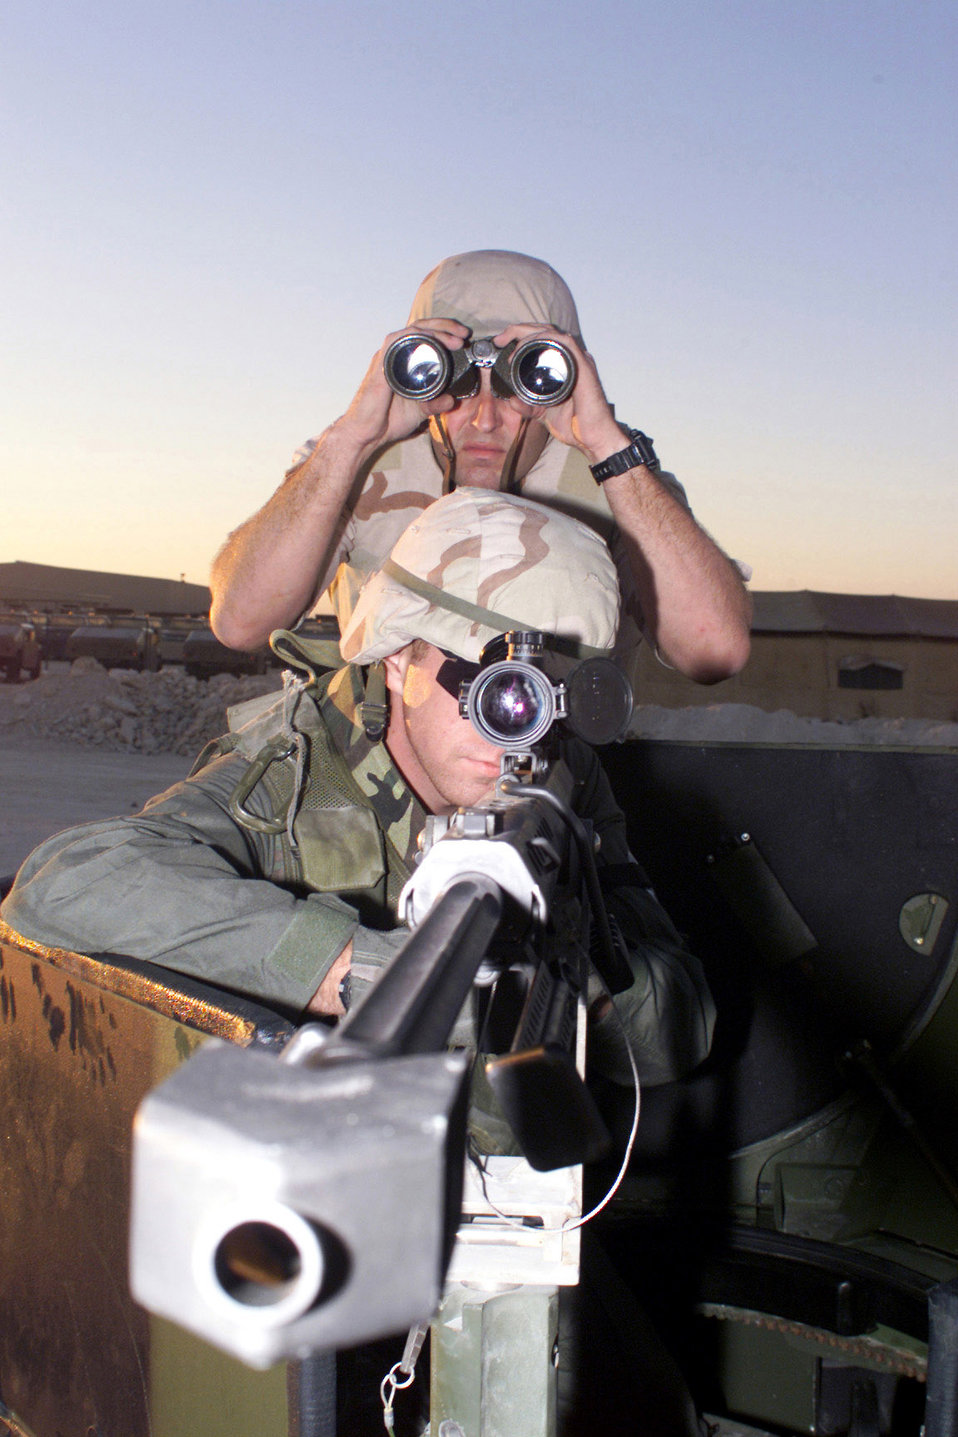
Barrett .50-caliber

OPERATION ENDURING FREEDOM -- Senior Airman Raymond Tate from the 366th Civil Engineer Squadron lines up the crosshairs on a simulated explosive device while training with Tech. Sgt. David Ashcraft from the 99th CES. They are using the explosive ordinance disposal team's Barrett .50-caliber semi-automatic rifle while deployed in support of Operation Enduring Freedom. The Barrett .50-caliber semi-automatic rifle is one of the many ways EOD team members can destroy explosive devices from a safe distance.